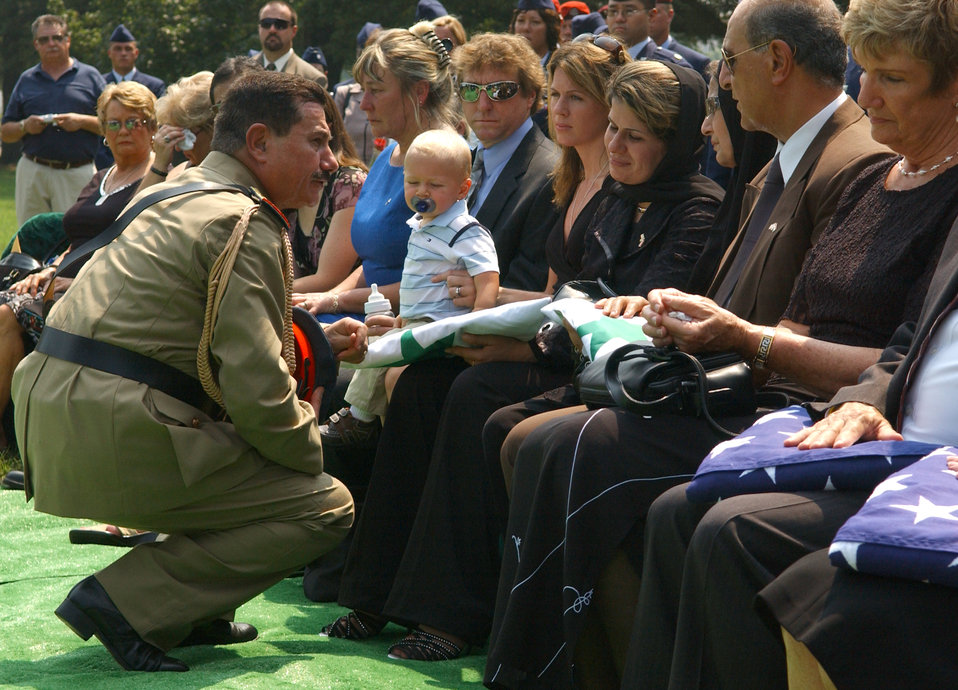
Group Burial

ARLINGTON NATIONAL CEMETERY, Va. -- Major Gen. Kamal Abdul-Sattar Barzanjy, Iraqi Air Force commander, presents the Iraq flag to Gen. and Mrs. Hussam Abass Ali, the parents of Capt. Ali Hussam Abass Alrubaeye, during a funeral held here Aug. 11 for the captain and four U.S. Airmen who died May 30 in an aircraft accident in Iraq.